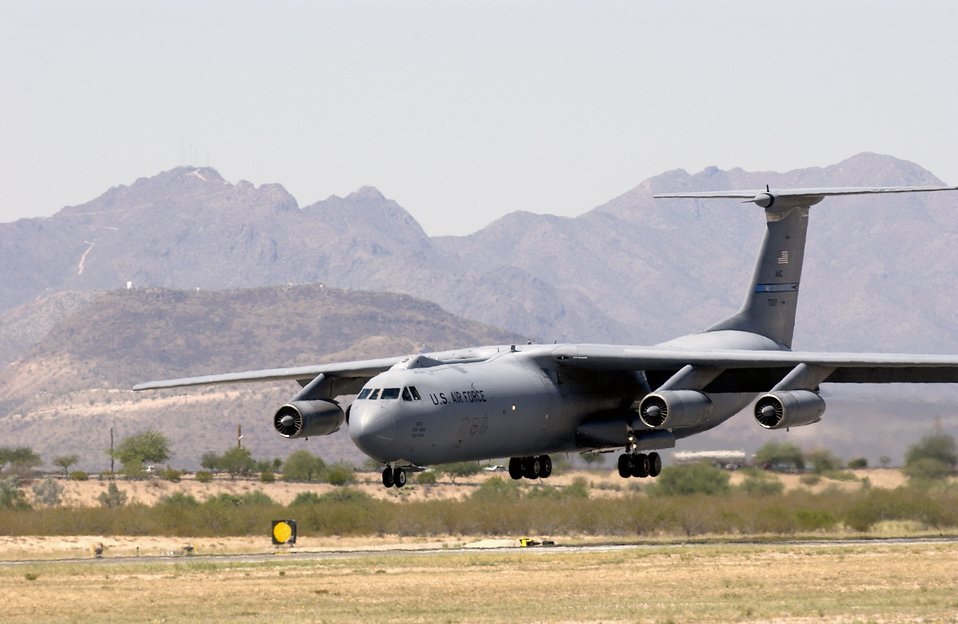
A happy ending

DAVIS-MONTHAN AIR FORCE BASE, Ariz. -- A C-141B Starlifter from McGuire Air Force Base, N.J., lands at the Aerospace Maintenance and Regeneration Center here Sept. 16. The C-141B Starlifters from McGuire have been retired from active duty Air Force Inventory after 40 years of service. The C-141B has been a vital element in world-wide airlift and combat support missions with more than 10 million flying hours.